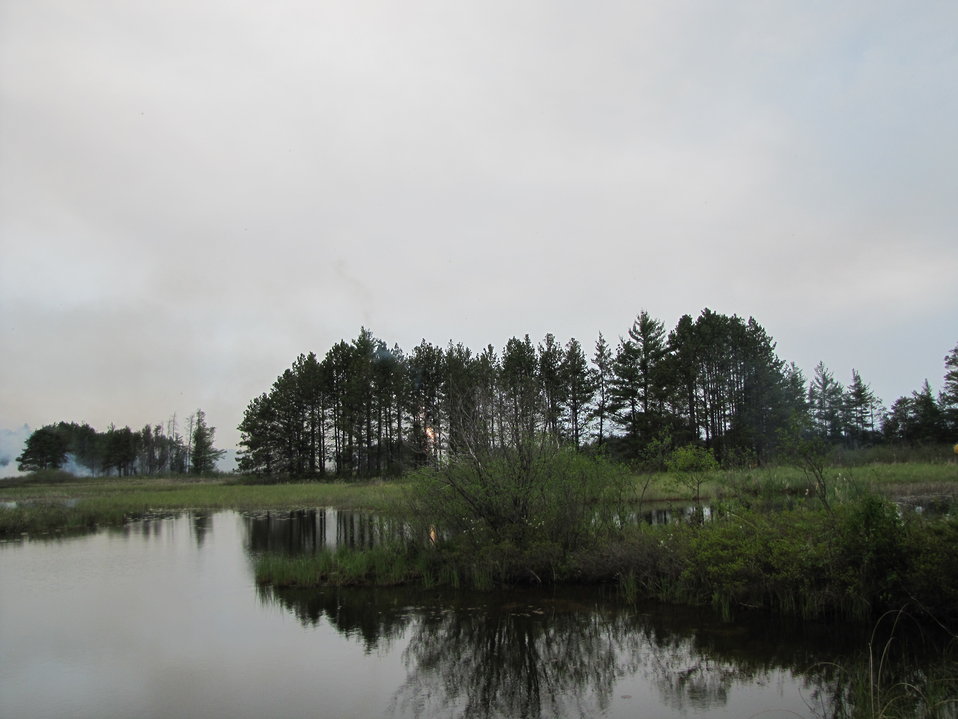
Smoke on the Horizon